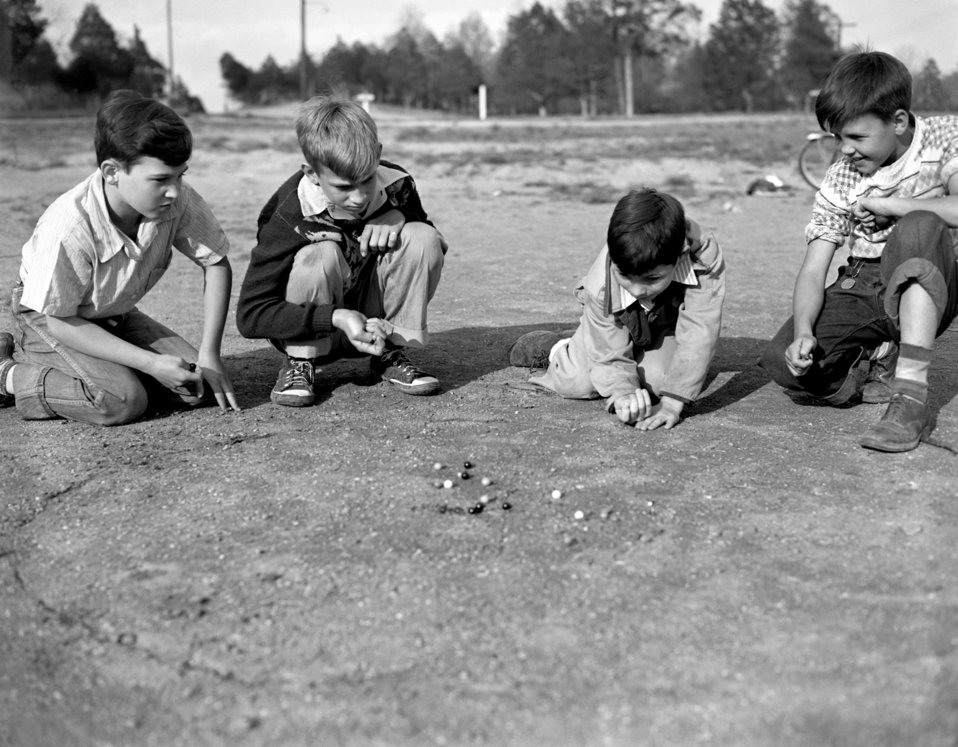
Boys Playing Marbles Oak Ridge 1947

3414-12b DOE photo Ed Westcott 4-17-1947 Oak Ridge Tennessee